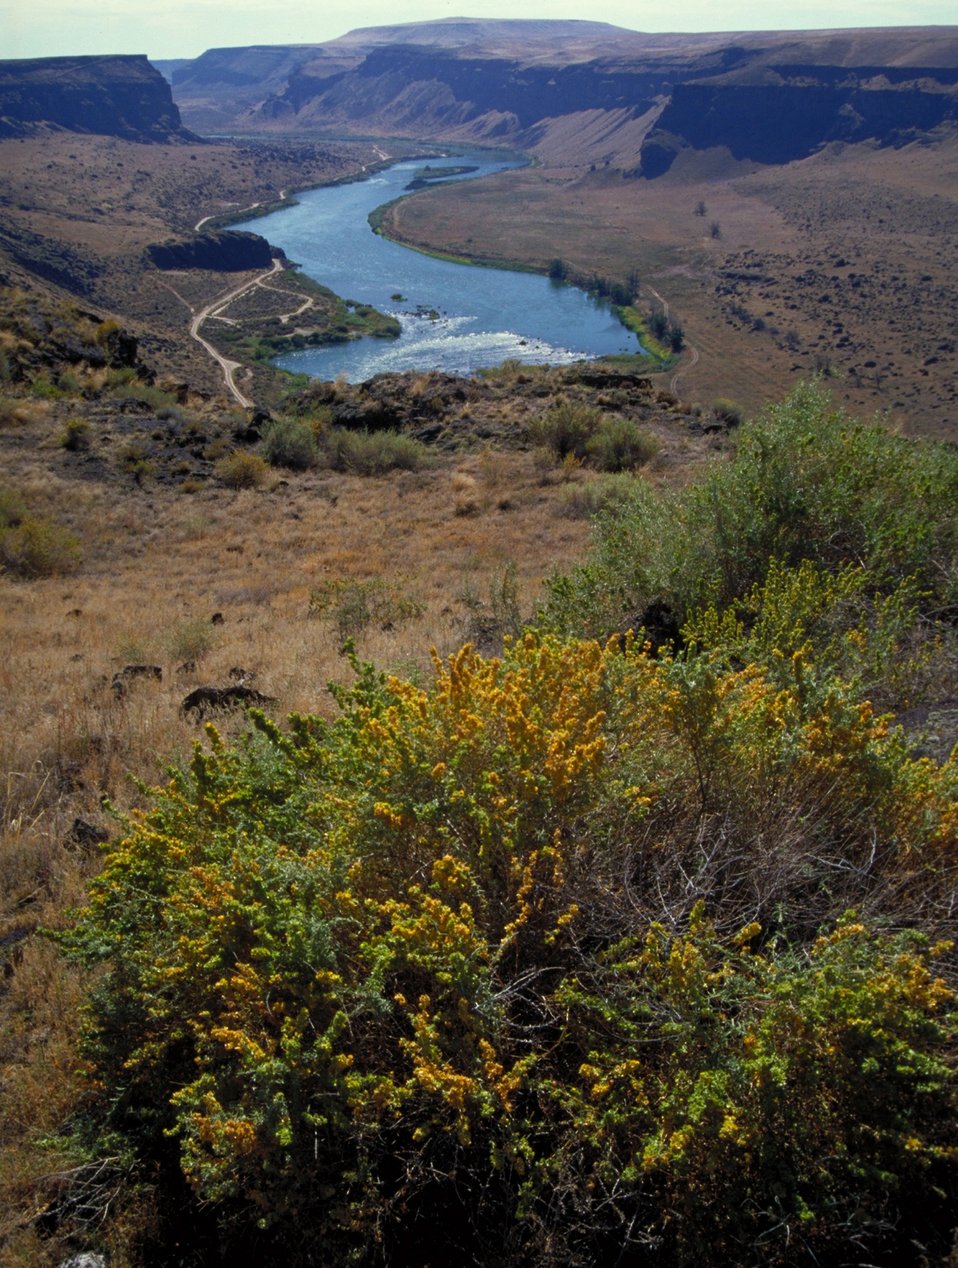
Snake River Birds of Prey National Conservation Area Scenic Owyhee Field Office Lower Snake River District LSRD